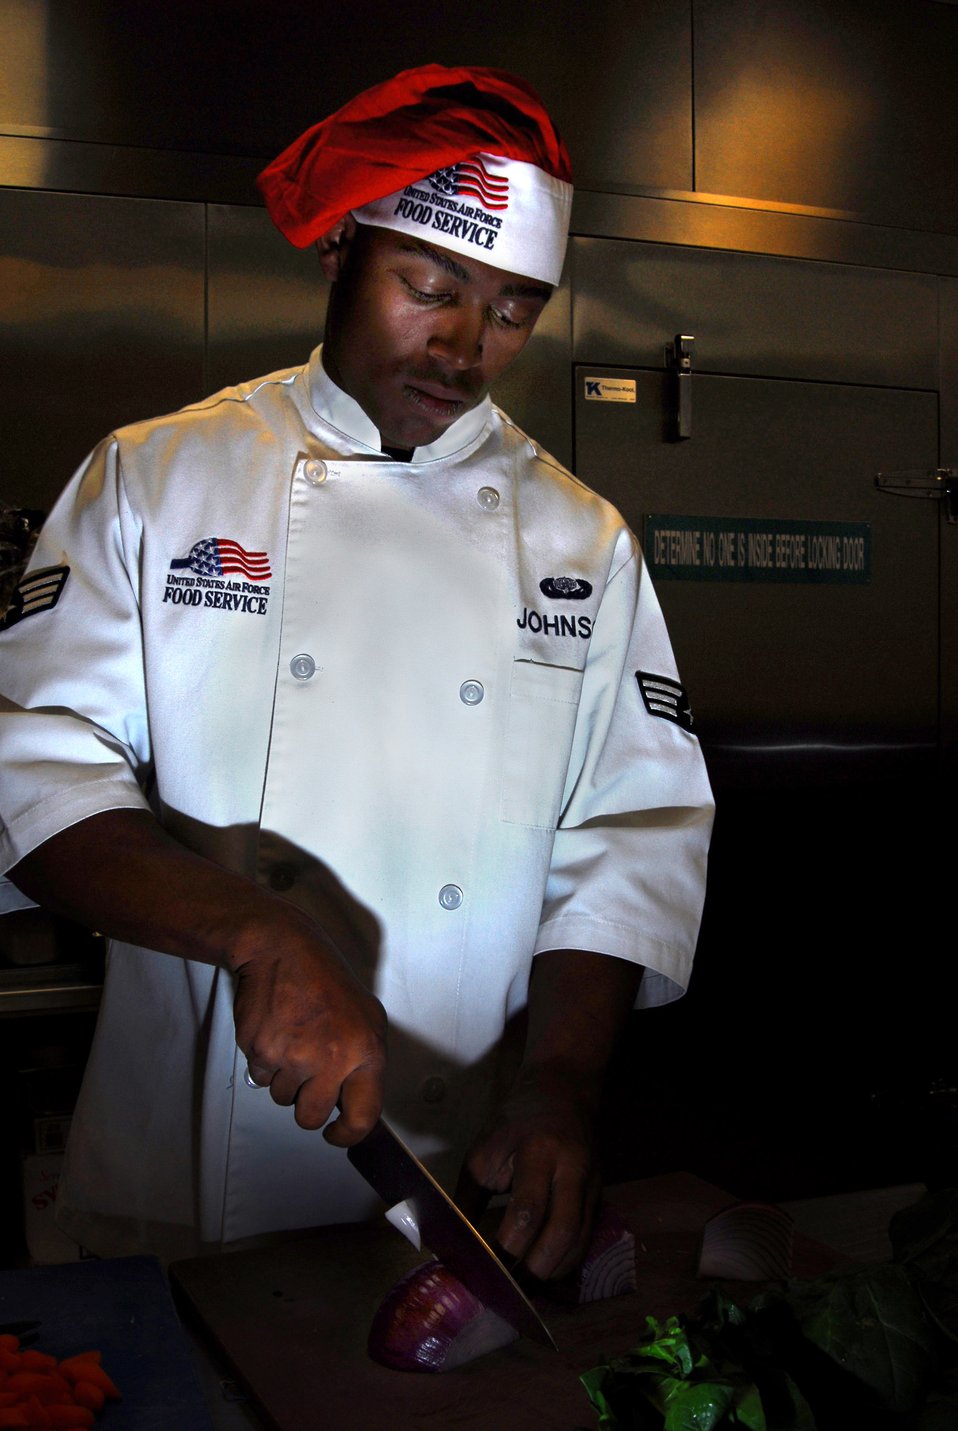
A future Iron Chef

Senior Airman Brandon Johnson slices red onions for stuffed pork loins during the Iron Chef competition March 10 at Hurlburt Field, Fla. Airman Johnson and two other chefs from nearby Florida Air Force bases participated. He won the competition, and received a trophy and culinary knife set.